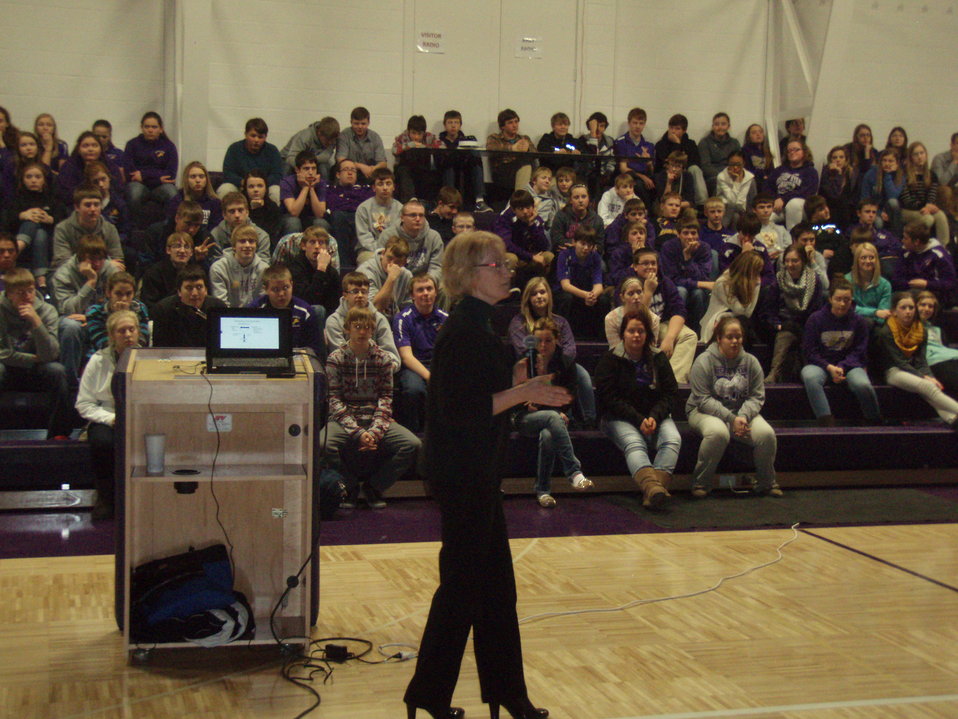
Bishop Ryan Catholic School SADD

Students Against Destructive Decisions (SADD) hosted an assembly with guest speaker Dr. Vicki Michels, Director of Addiction Studies at Minot State University, as part of SADD's 'Signature Events' program in Minot, North Dakota.